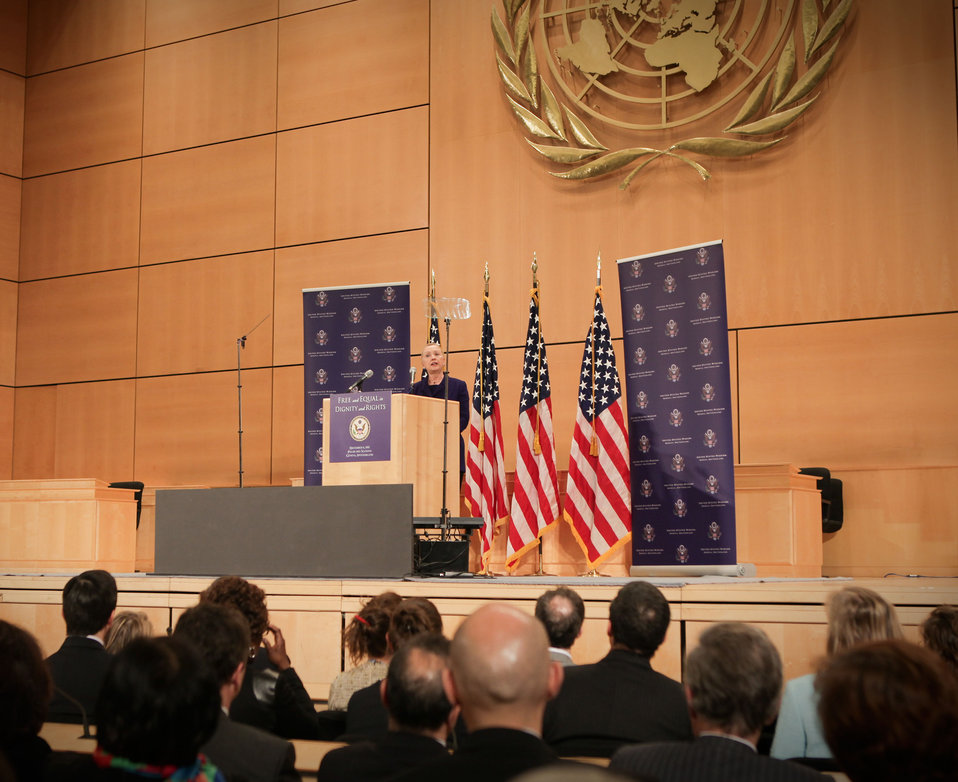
Secretary Clinton Delivers Remarks in Honor of International Human Rights Day

U.S. Secretary of State Hillary Rodham Clinton delivers remarks on 'Free and Equal in Dignity and Rights' in recognition of International Human Rights Day at the United Nations Office at Geneva in Switzerland on December 6, 2011.